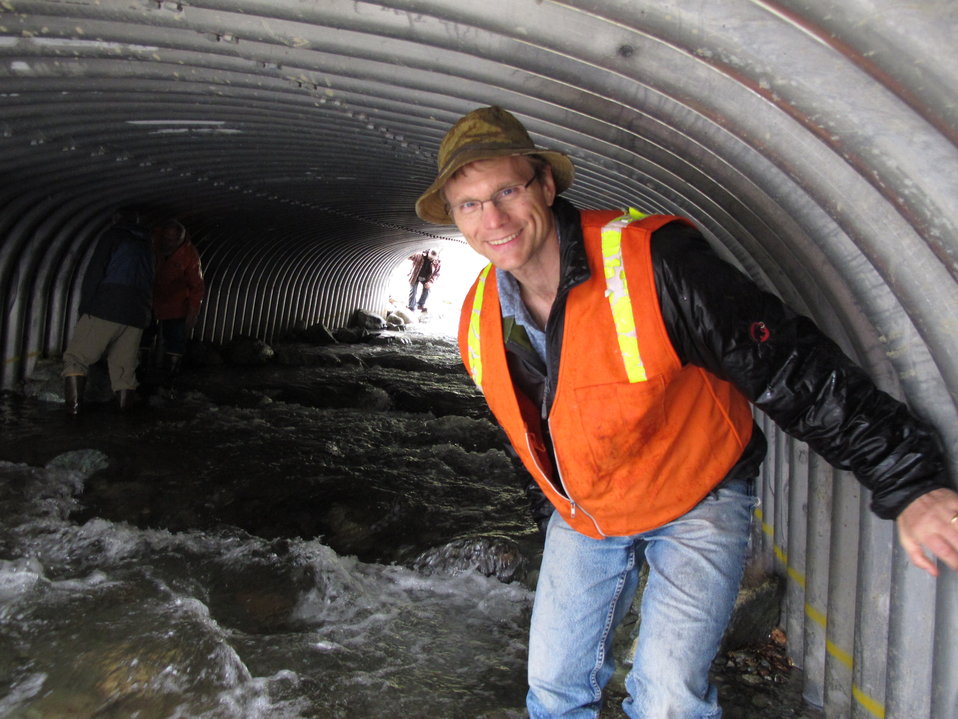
Government Creek's fish-friendly culvert

Fish Passage Engineer Bill Rice passes through a fish-friendly culvert in Wasilla,
Alaska. USFWS/Katrina Mueller